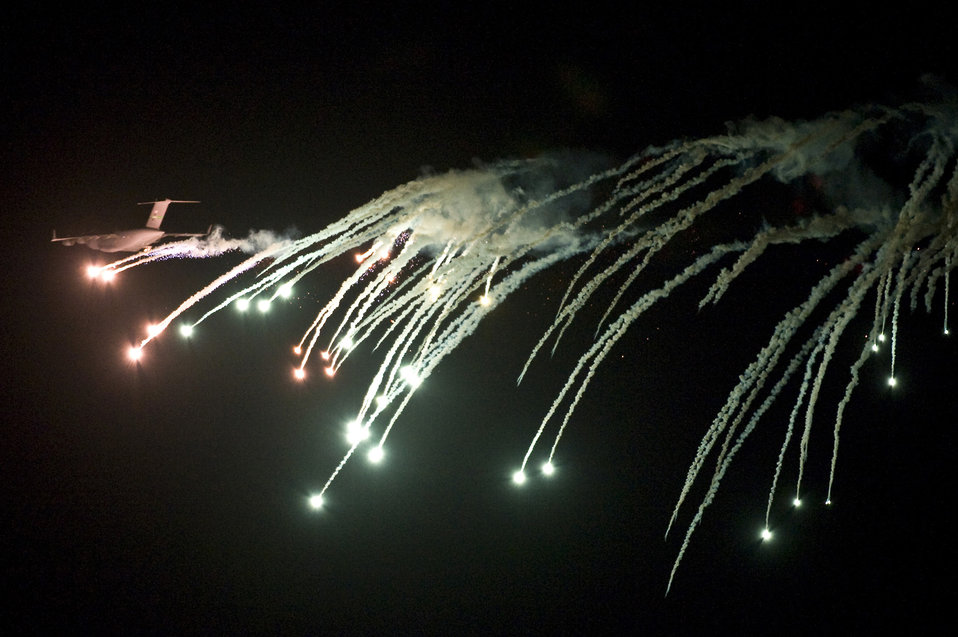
It's raining flares, hallelujah!

A C-17 Globemaster III performs evasive counter measures by launching flares during a Mobility Air Forces Exercise Nov. 16, 2011, over the Nevada Test and Training Range. The U.S. Air Force Weapons School holds MAFEX twice a year to test the ability of C-17A Globemaster III and C-130 Hercules aircrews from Air Force bases around the world.